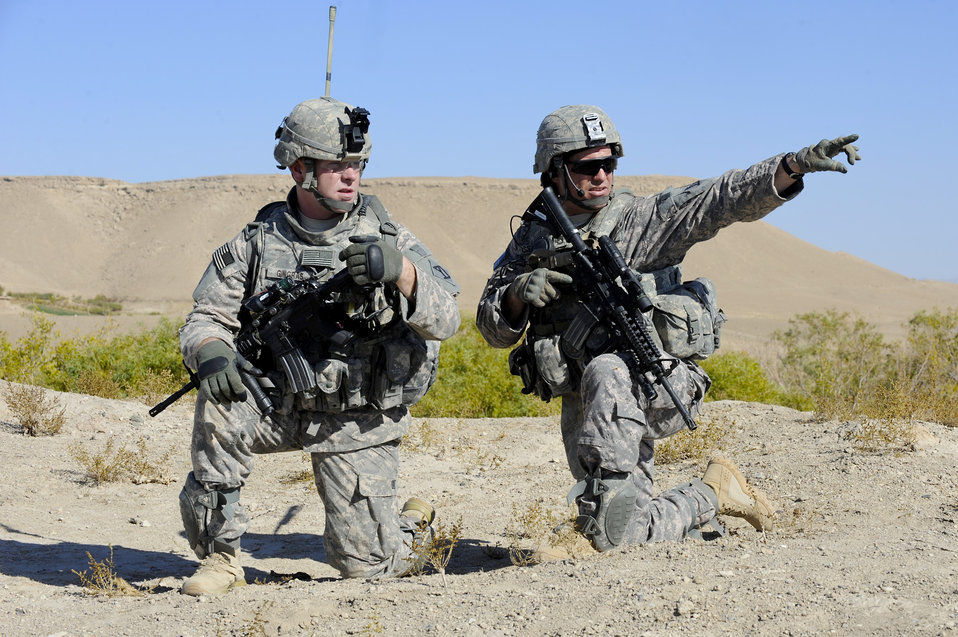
Provincial Reconstruction Team Zabul

Staff Sgt. Wilfred Gingras (left) and Sgt. 1st Class Jeff Cesaitis familiarize themselves with the area during a patrol Nov. 1, 2010, near the city of Qalat, Afghanistan, in the Zabul Province. The Provincial Reconstruction Team Zabul is composed of Air Force, Army, Department of State, U.S. Agency for International Development and Department of Agriculture personnel who work with the government of Afghanistan to improve governance, stability, and development throughout the province.